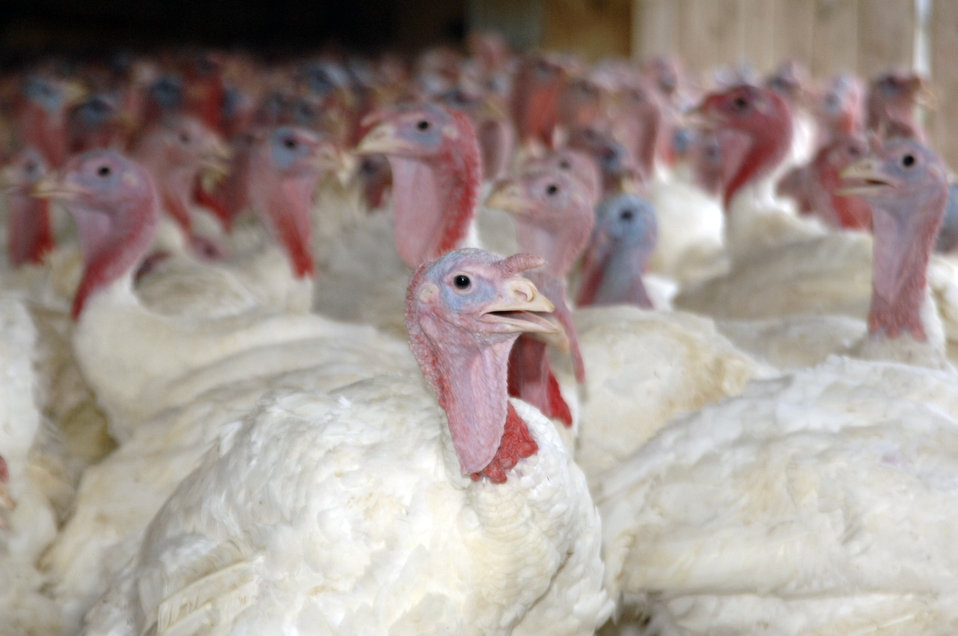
Farm-bred domesticated turkeys are big business in Rockingham County, Virginia on September 9, 2008.